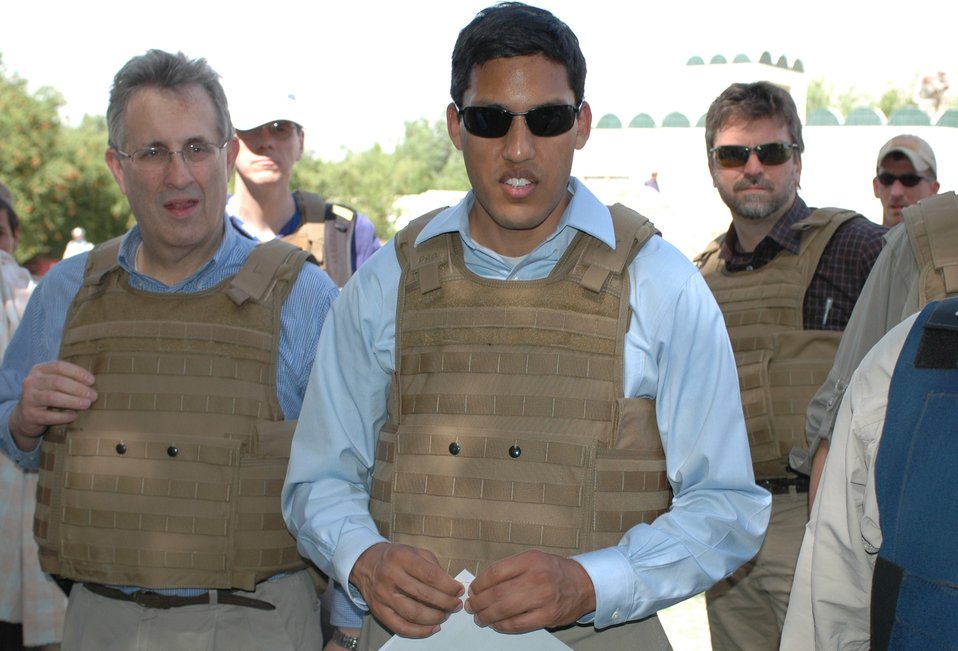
Dr Shah Visits Argandab April 10, 2010